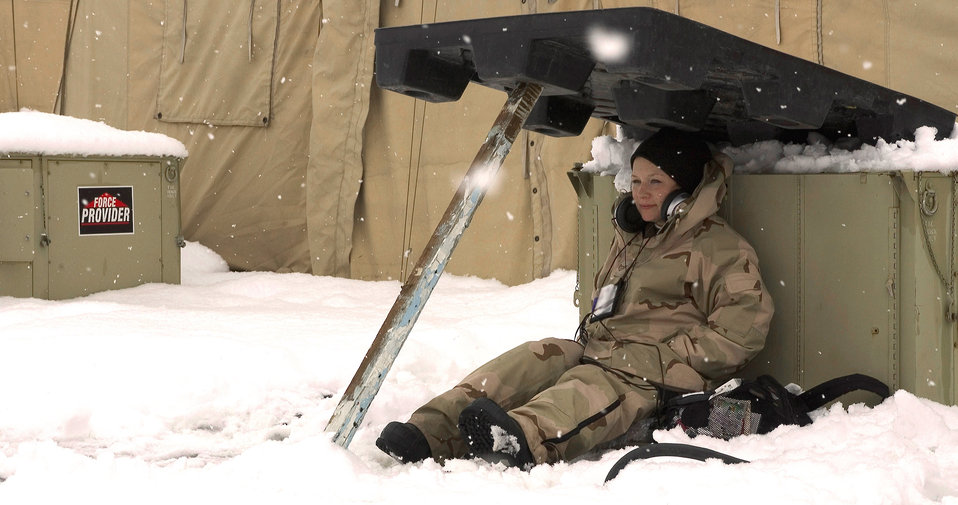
Gimme shelter

MANAS AIR BASE, Kyrgyzstan -- Airman 1st Class Amber Schwindt finds shelter from the snow while keeping an eye on her workers performing construction here. She and other 376th Security Force Squadron's escorts wear hand warmers, winter boots, ski masks, gloves and layers upon layers of garments to keep warm through out the long day. Airman Schwindt is deployed from Aviano Air Base, Italy. .